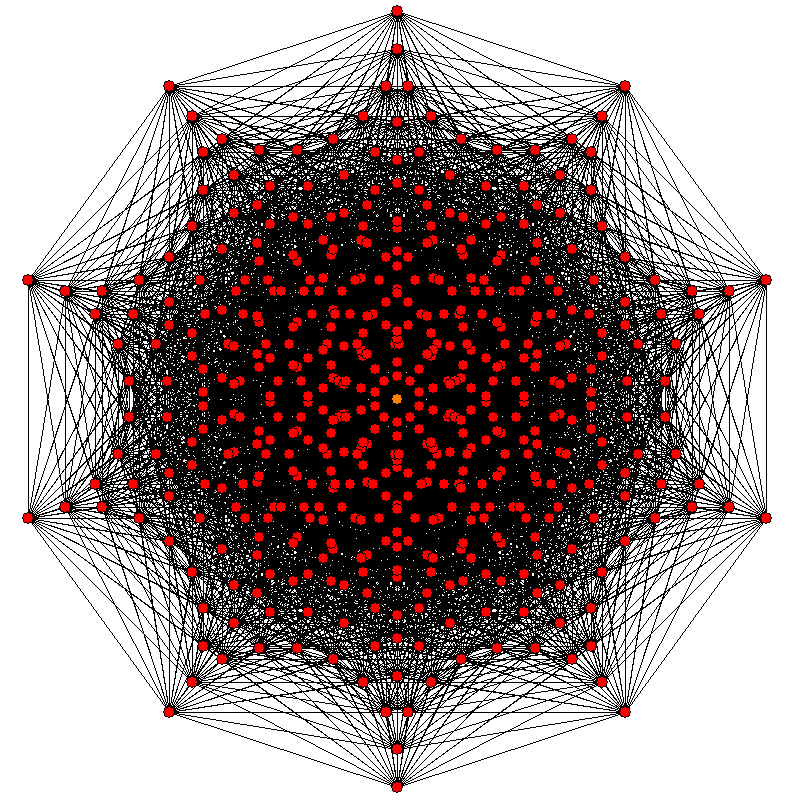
10-demicube graph